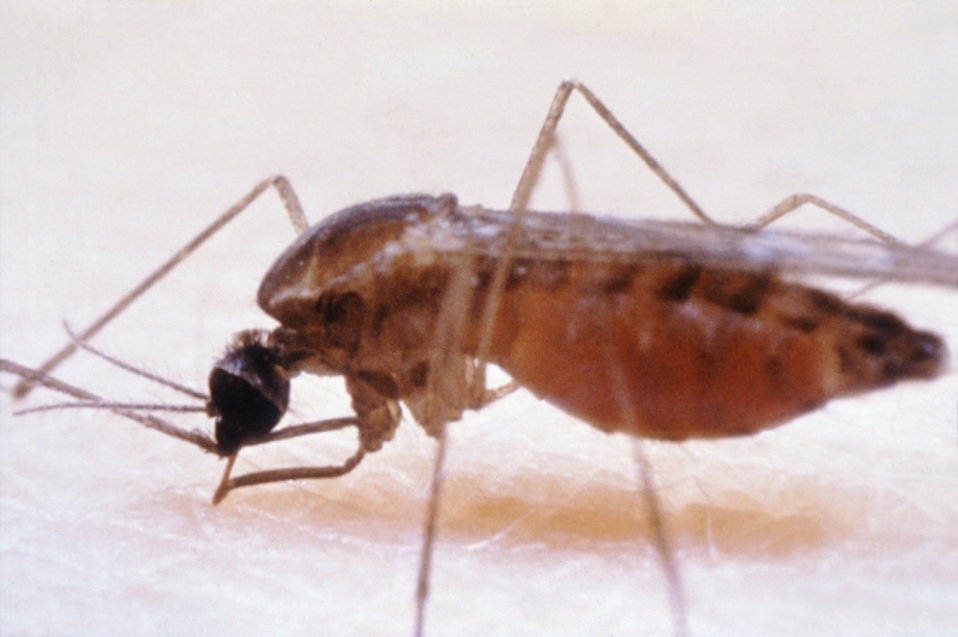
This photograph of a mosquito was taken during a 1972 study of disease carriers, and pests of migrant labor camps.